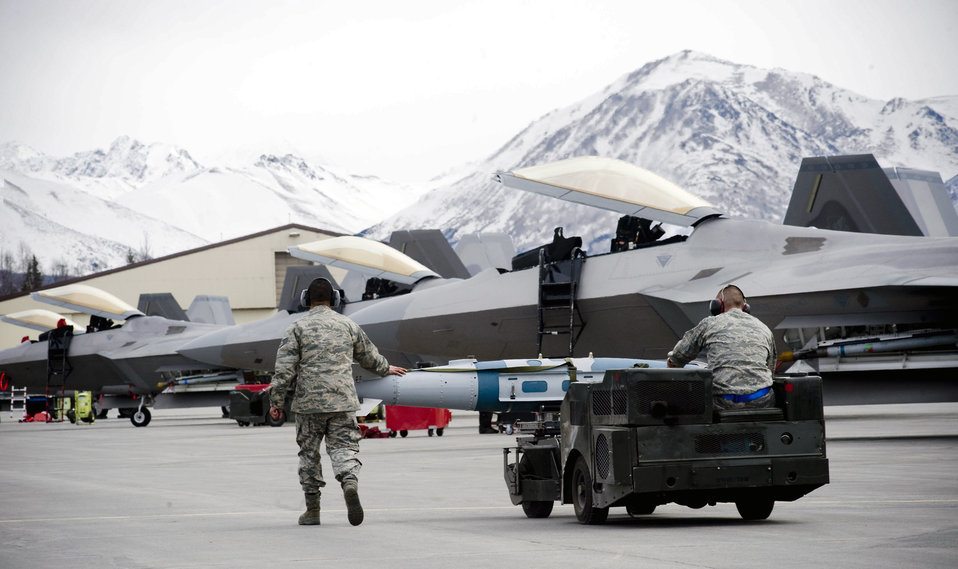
Bombs on target

Staff Sgts. Michael Kalmar and Justin Akins move a Joint Direct Attack Munition along the flightline as F-22 Raptors await missions April 14 at Elmendorf Air Force Base, Alaska. Sergeants Kalmar and Akins are from the 525th Aircraft Maintenance Unit and ensured the JDAM dropped by the 525th Fighter Squadron is successful.